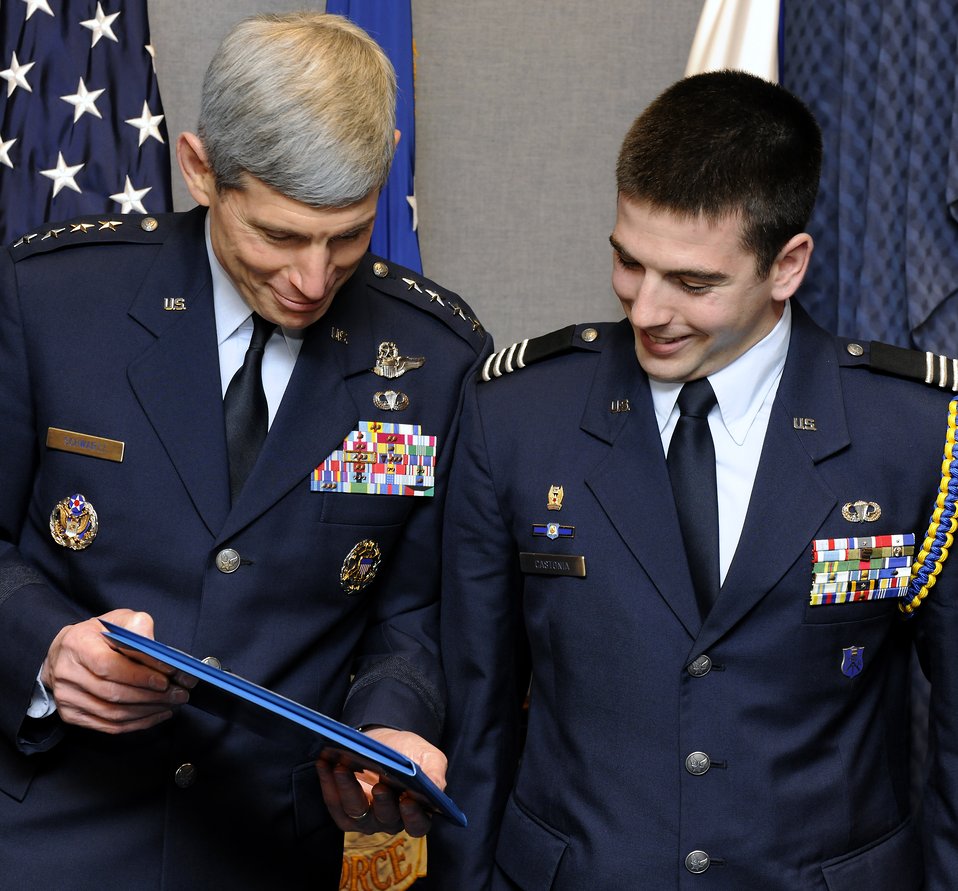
Cadet of the Year

Air Force Chief of Staff Gen. Norton Schwartz shows Cadet Col. Ryan W. Castonia the citation accompanying his U.S. Air Force Cadet of the Year award for 2009 in the Pentagon April 5, 2010. Cadet Castonia is a graduate student at Massachusetts Institute of Technology and a member of MIT's Reserve Officer Training Corps.